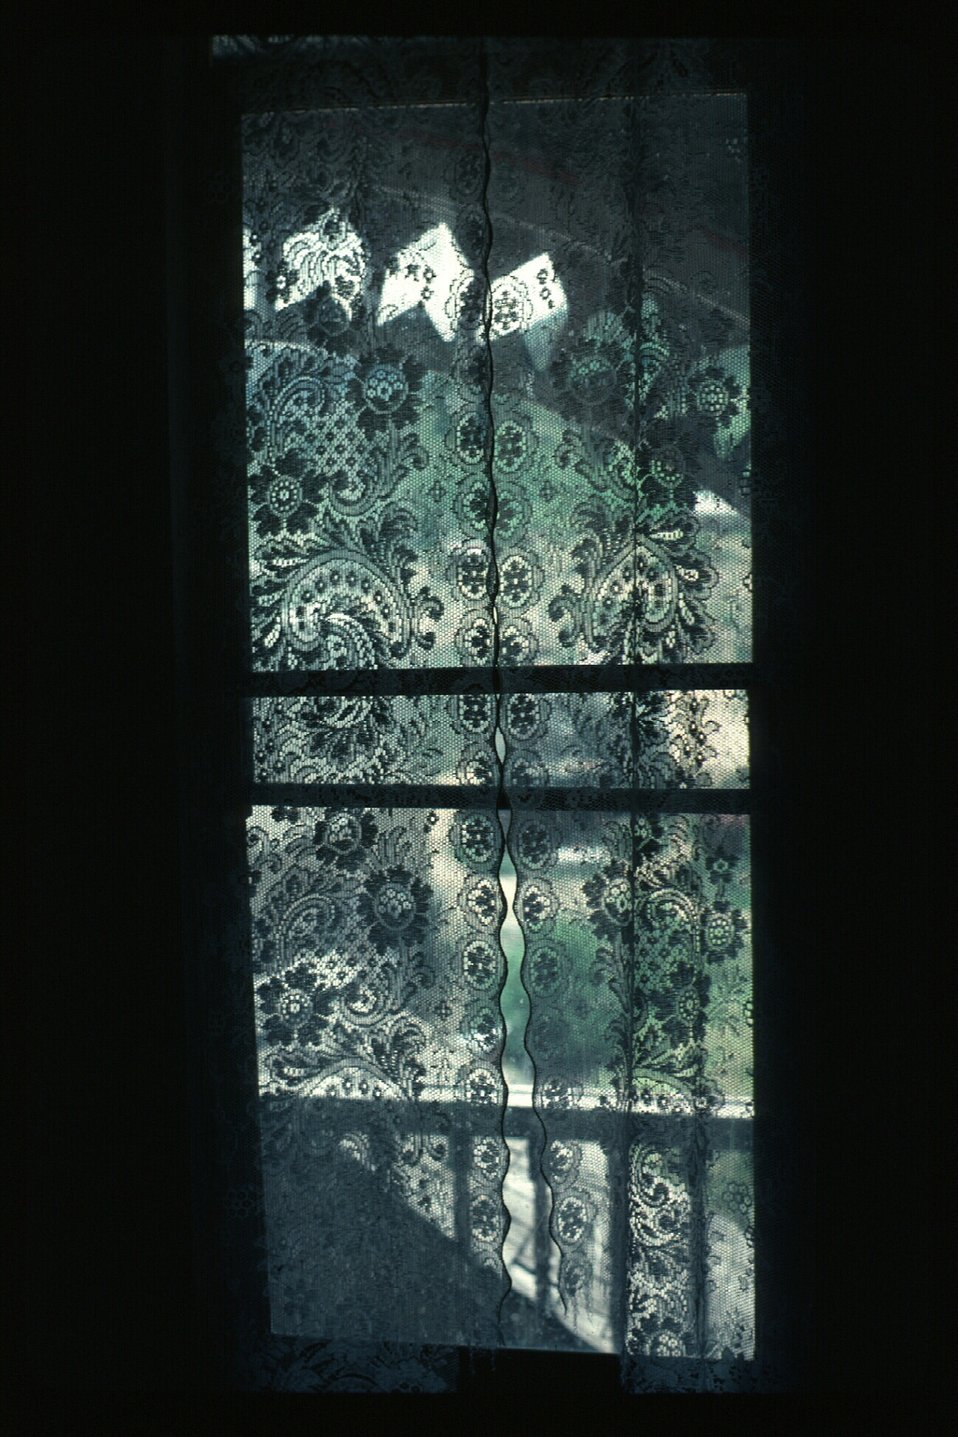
Window in Stoddard House Silver City Archeology LSRD Lower Snake River District